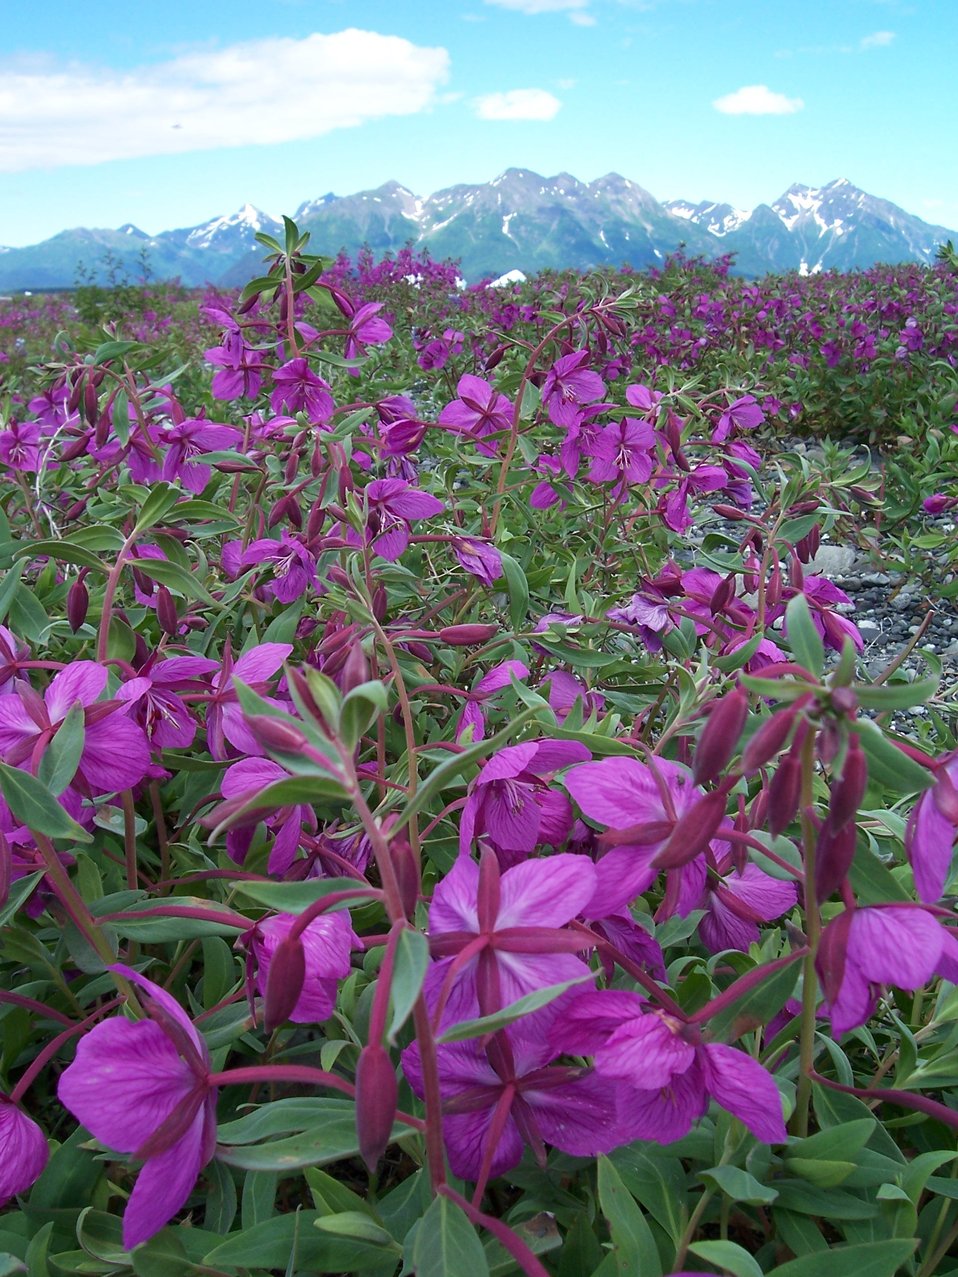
CU flowers-mountain BG

A massive field of fireweed covers the ground across this open expanse of landscape at the foot of one of hundreds of mountain peaks across southeast Alaska and the Tongass National Forest.